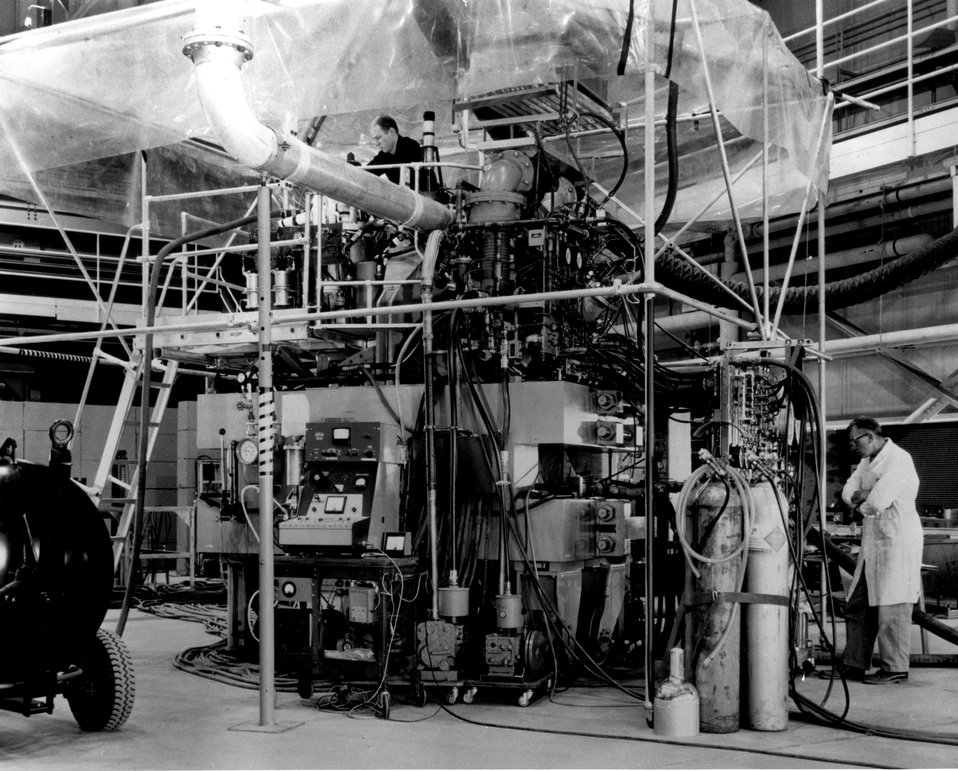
The Brookhaven 20-inch bubble chamber, installed in the Cosmotron experimental area. In the chamber, liquid hydrogen is super heated by a sudden reduction in pressure, which is timed to coincide with the moment when pulsed particles from the Cosmotron enter. c. 1960